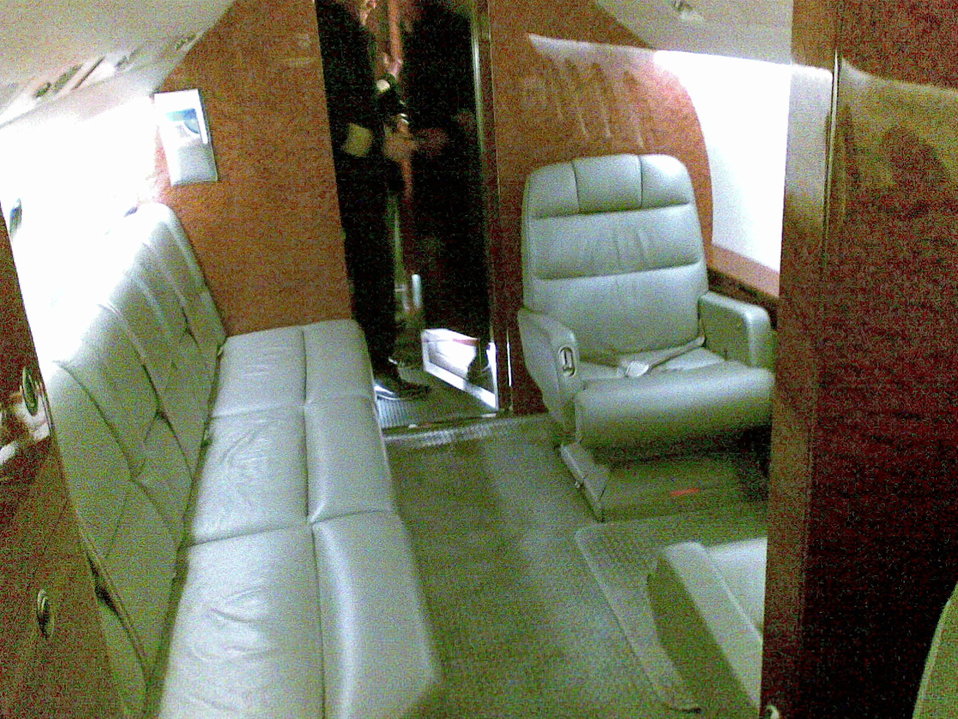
Deutsch: D-AZEM Kabine